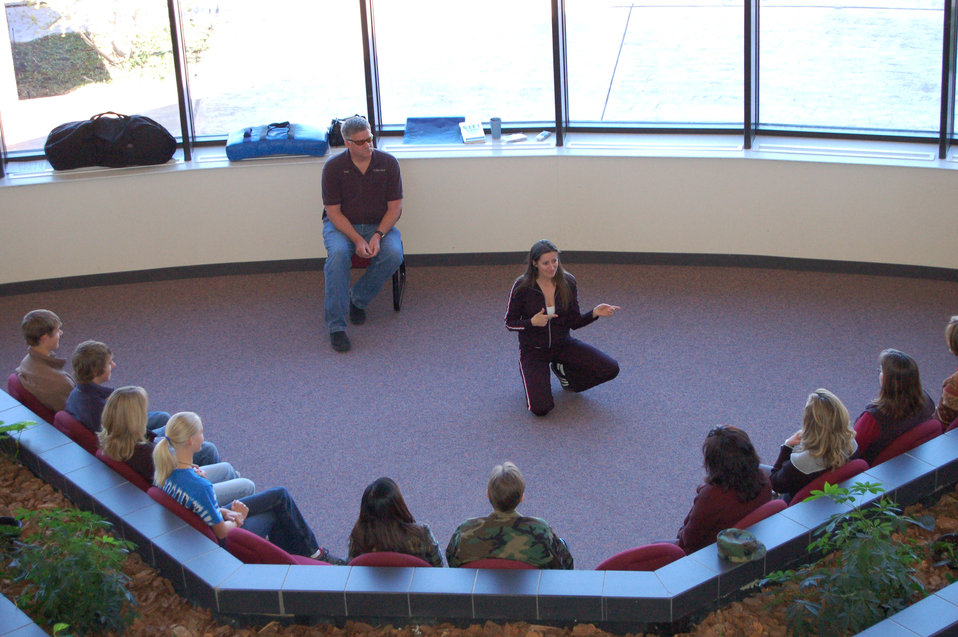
Airmen get smart with sexual assault training

Fullpower workshop instructor Sam Rush-Walton provides guidance April 11 to attendees on how to avoid being assaulted . The workshop was held in recognition of April being Sexual Assault Awareness Month. The attendees learned about protecting personal boundaries, de-escalating threatening confrontations, dealing with verbal attacks, stopping sexual harassment and using physical self-defense to escape from an assault.